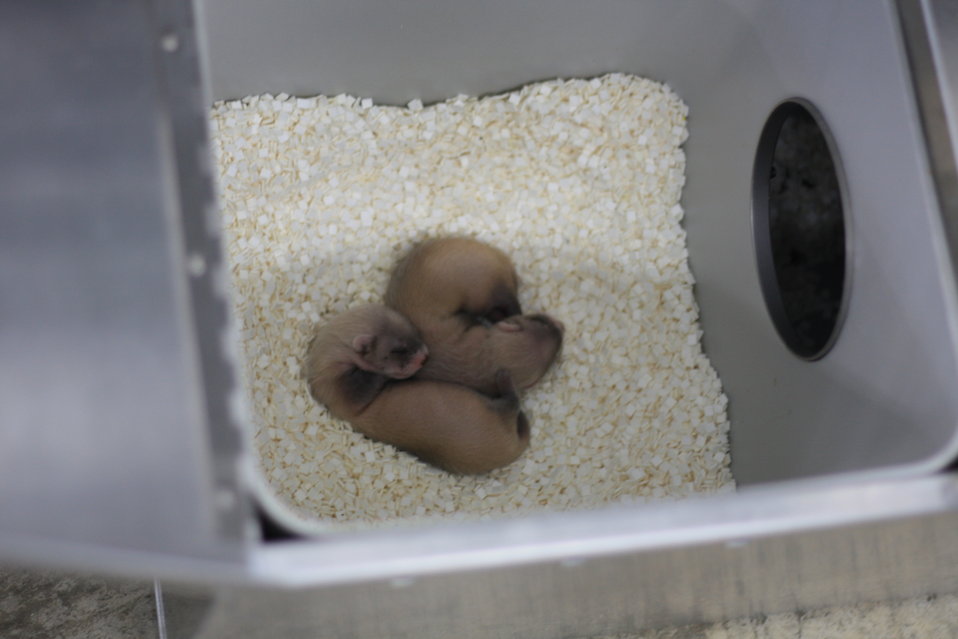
Interns visit the NBFFCC

In the summer of 2012, USFWS Region 6 interns visited the National Black-footed Ferret Conservation Center (NBFFCC) in Colorado to learn how the program reintroduces the endangered Black-footed ferret back into its native habitat.